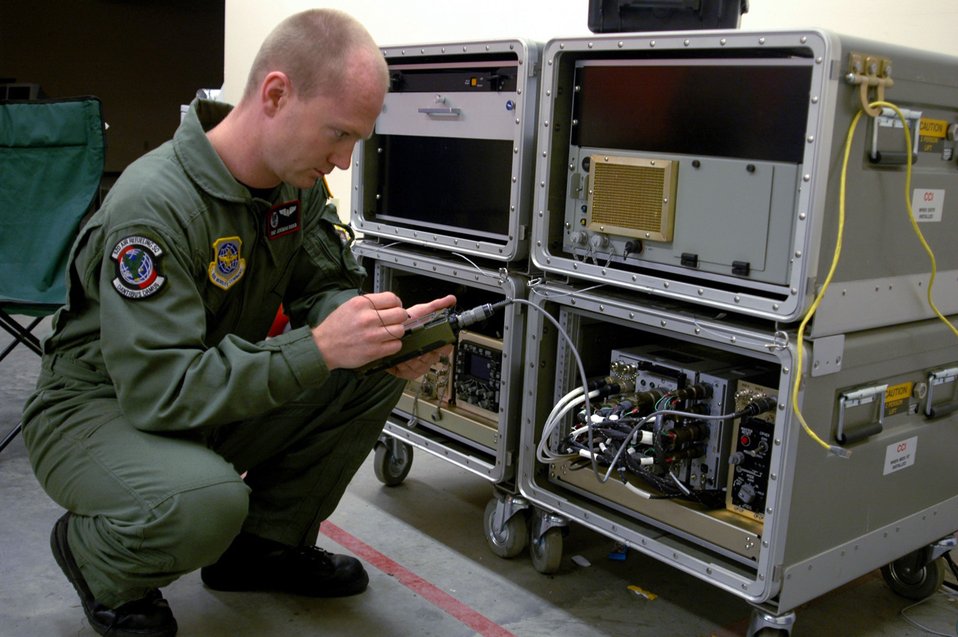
ROBE

FAIRCHILD AIR FORCE BASE, Wash. (AFPN) -- Tech. Sgt. Jeremiah Docken loads data into a Roll-On Beyond Line-of-Sight Enhancement Spiral 2 kit as part of a training exercise Jan. 17. Two Airmen can load and attach the kit to a ROBE-enhanced KC-135 Stratotanker. Sergeant Docken is a boom operator with the 92nd Air Refueling Squadron.